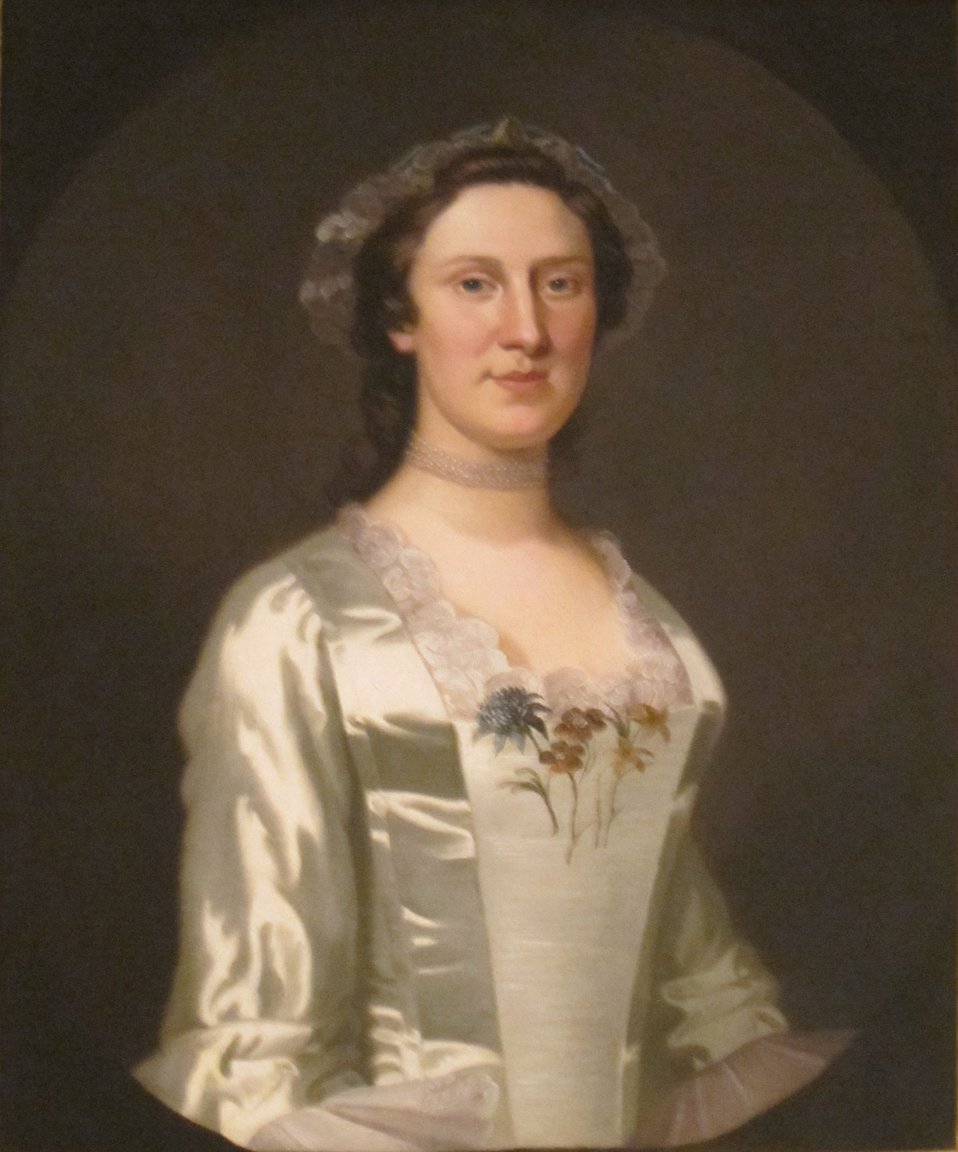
Mrs. Philip de Visme (Anna Proro Stillwell), oil on canvas painting by John Wollaston, 1749-52, Dayton Art Institute